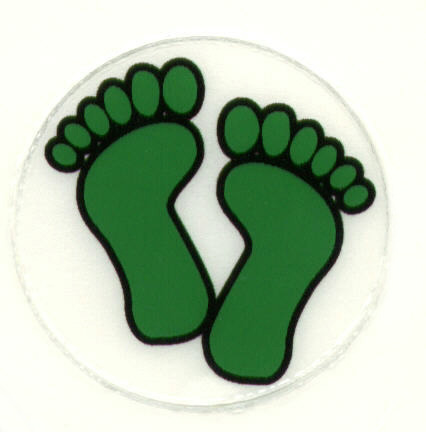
Honoring Service

This is the Jolly Green feet logo representing the Air Force rescue community. Air Force and Notre Dame will wear the added decal for their Veterans Day game to honor those who serve so other may live.